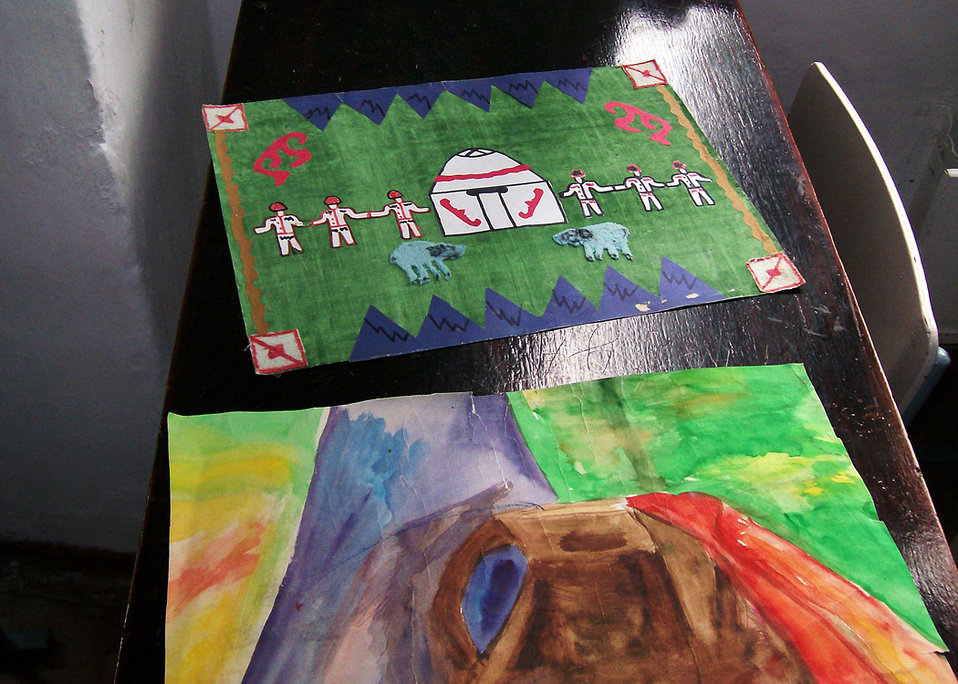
Stateside donations give Kyrgyz students tools of art trade

Artwork created by students at the Manas Village School in Kyrgyzstan is pictured. Members of the 376th Expeditionary Medical Group at Manas Air Base, Kyrgyzstan, delivered handmade art easels and art supply donations to the school in May.